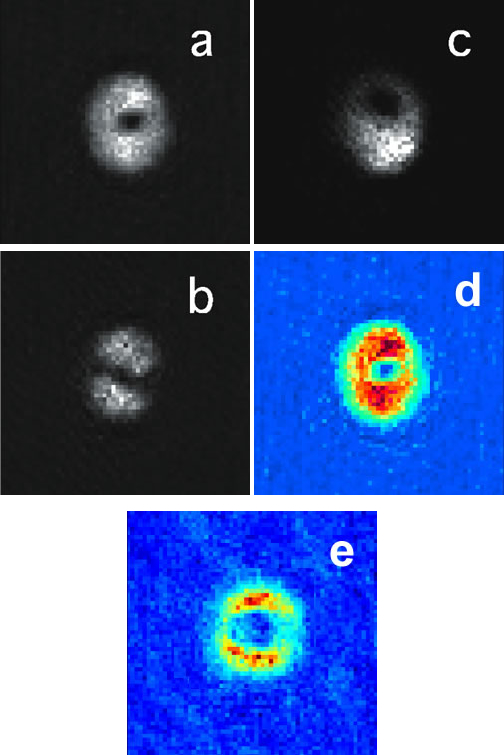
Physics; Atoms

Quantum weirdness: Pictures of a BEC 'cloud' of sodium atoms in the NIST experiment to transfer rotational energy to a quantum system show the cloud (a) rotating in a donut-shaped vortex, and interfering with itself as the cloud (b) simultaneously rotates in opposite directions, and (c) simultaneously rotates and stands still. Rotational energy is transferred in quantized amounts. False-color images show (d) one and (e) two units of rotational motion.